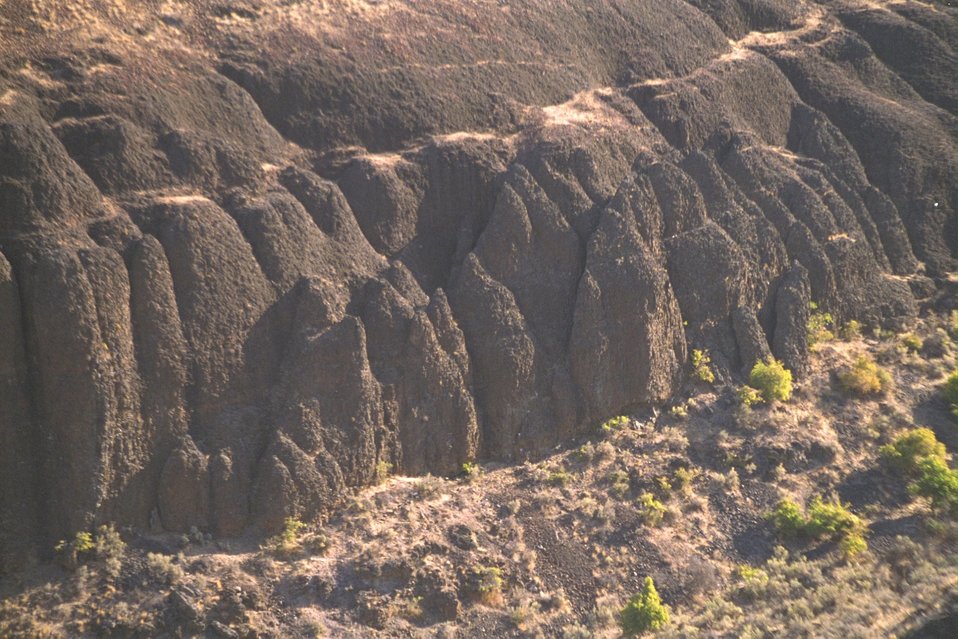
Lava cliffs near the John Day River.